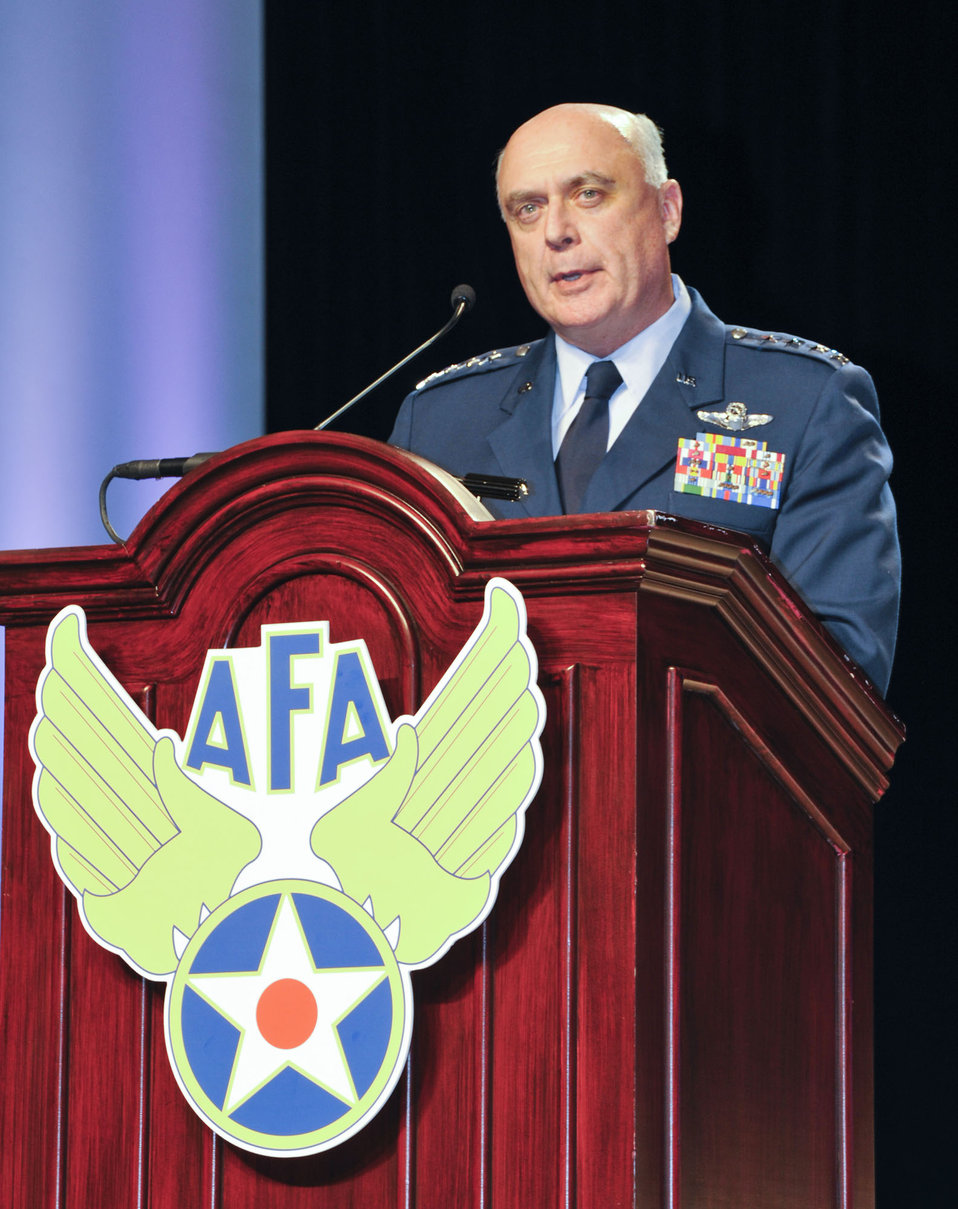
Outstanding Airmen honored at dinner

Air Force Vice Chief of Staff Gen. Carrol H.